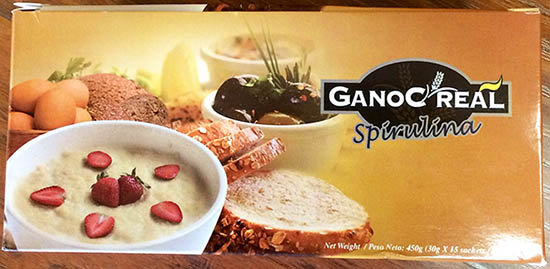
RECALLED – Instant cereal called C'Real Spirulina

January 28, 2014 – Product Recall – Gano Excel USA Inc. Announces Recall of C’Real Spirulina.